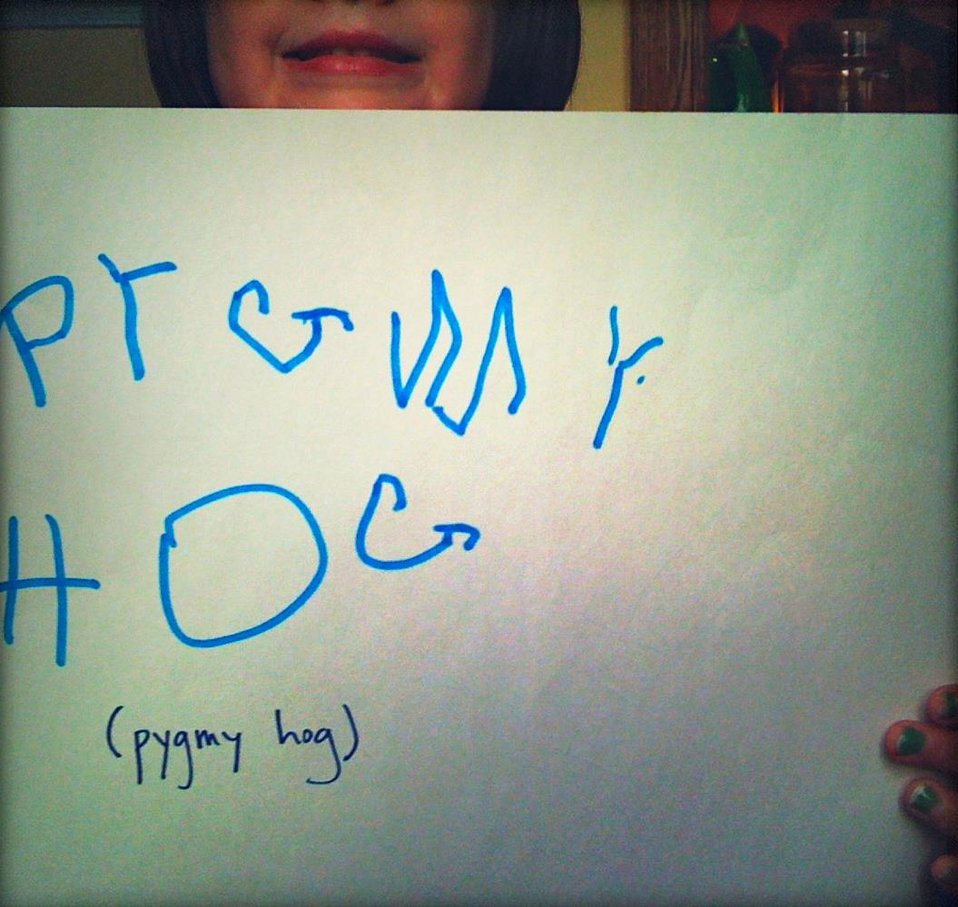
Cory Brown, 'Pygmy Hog,'

International Affairs participates in FFI's In Our Hands campaign